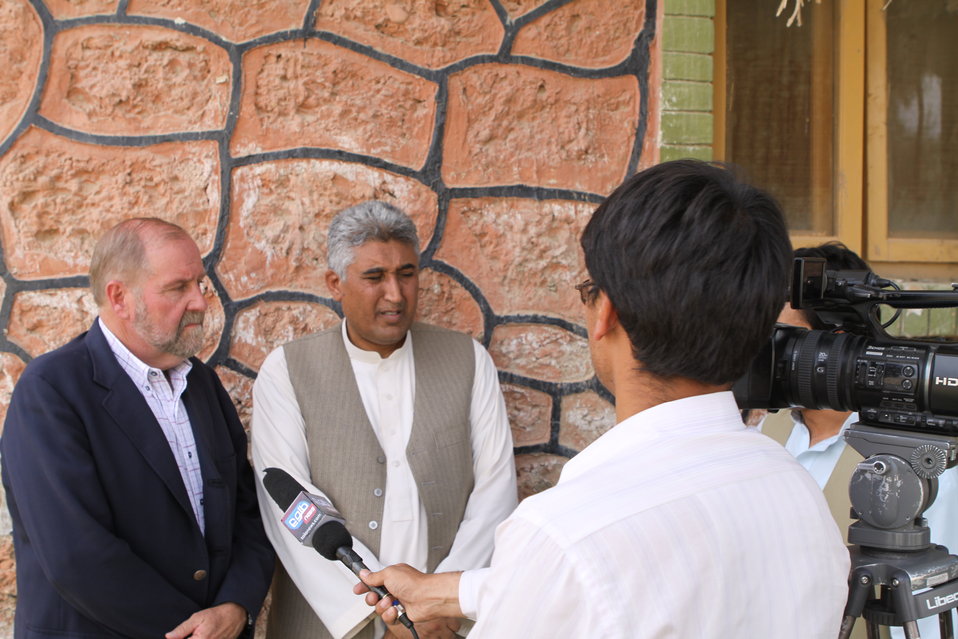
Bolan Poultry Farm